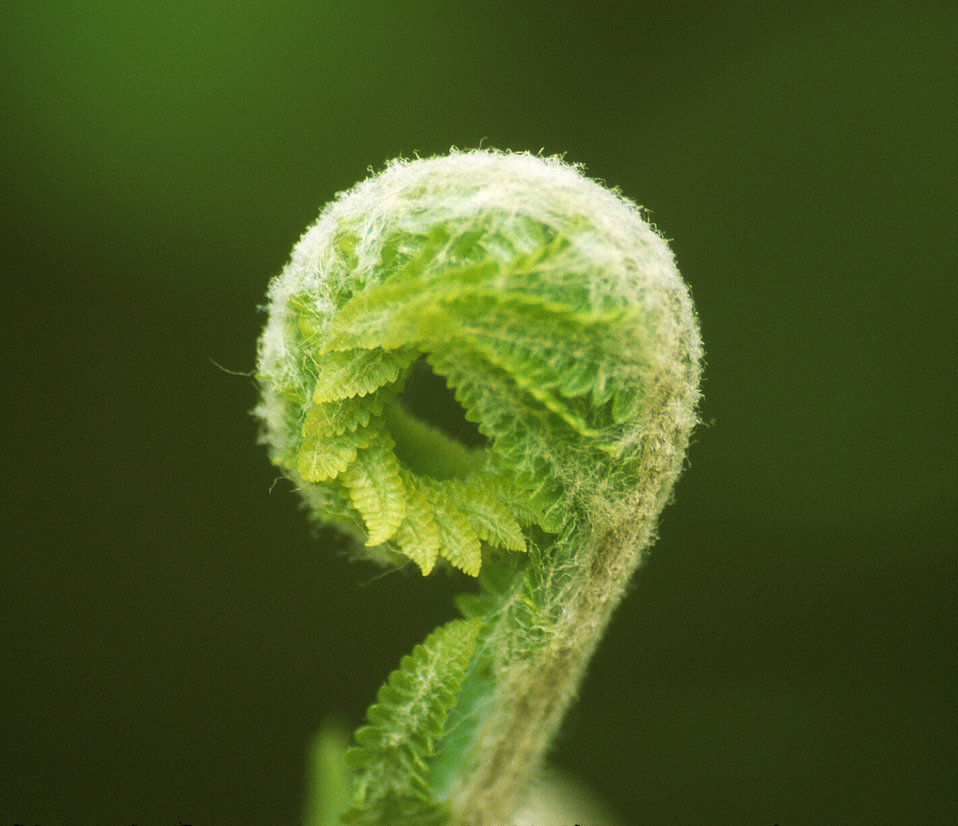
Photo of the Week - Fern Fiddlehead (WV)

Photo of the Week - 7/23/12

The tender fronds of a fern unfurl at Canaan Valley National Wildlife Refuge.